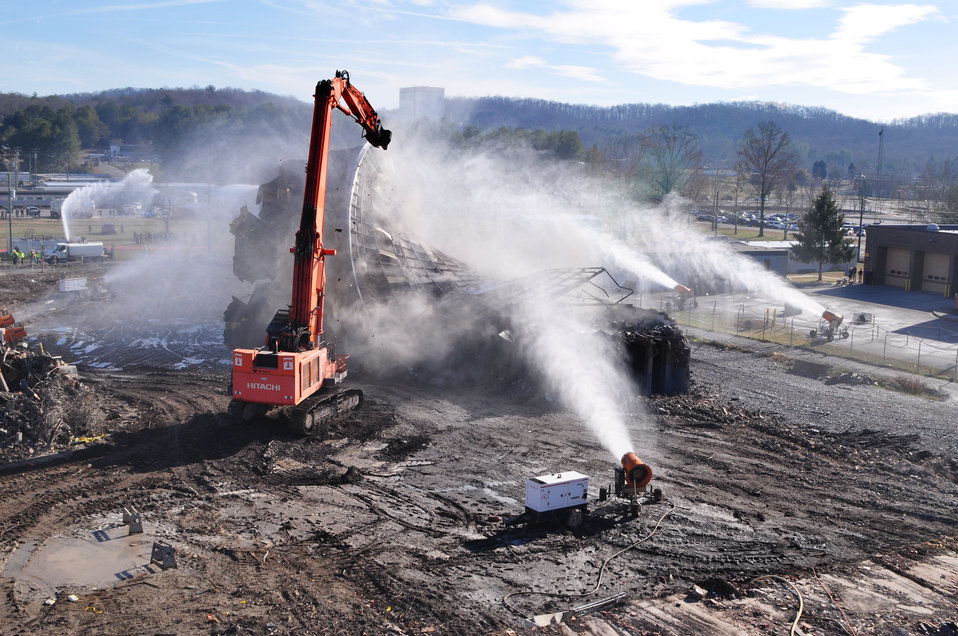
Last Part of K-25 Coming Down Oak Ridge 2013

13-157-1 DOE photo Lynn Freeny 12-19-2013 Oak Ridge Tennessee